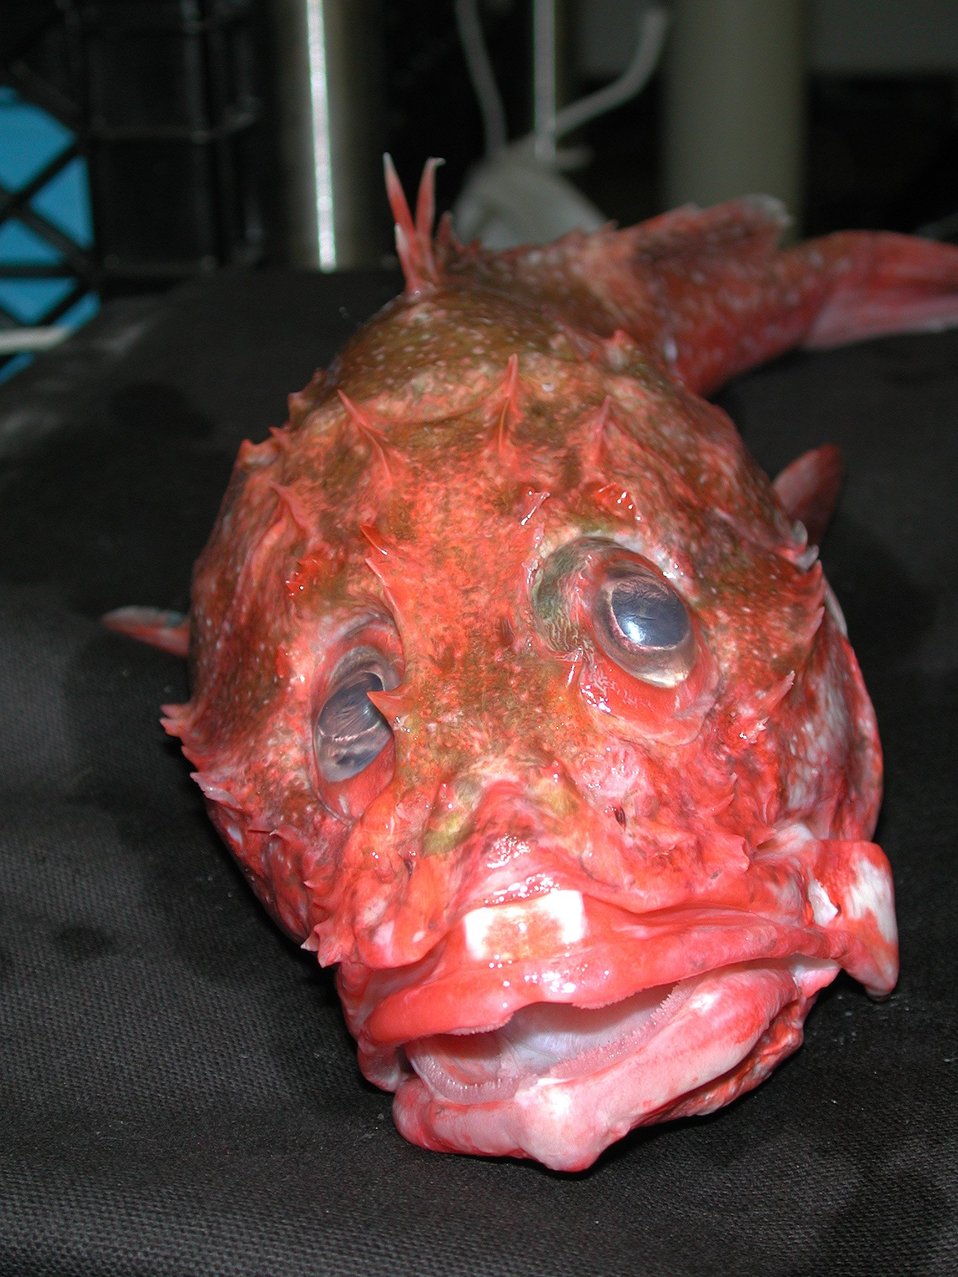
Scorpion fish